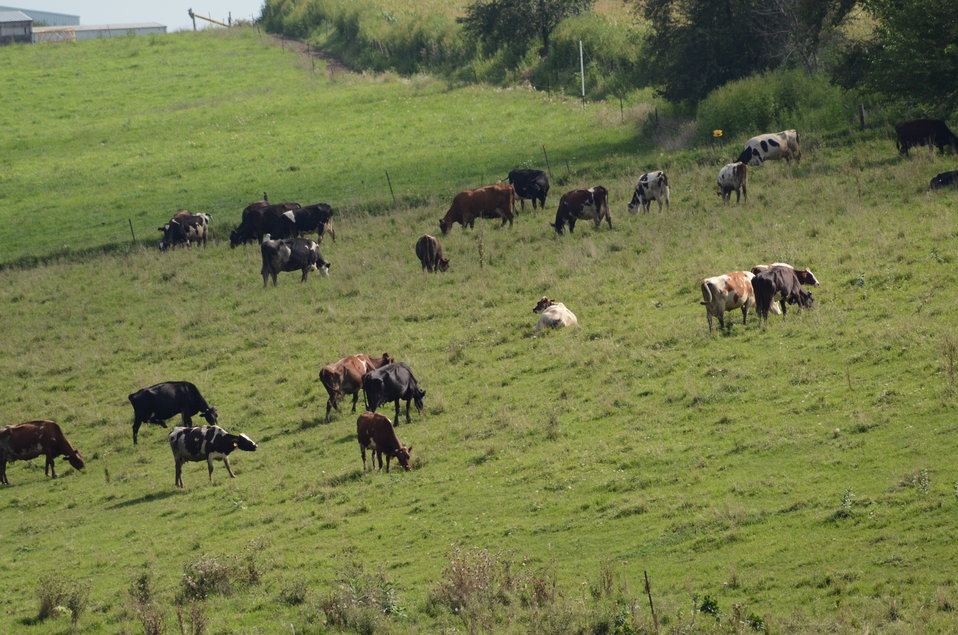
Dairy Farm near Poesta, IA, on Tuesday, Aug. 16, 2011.